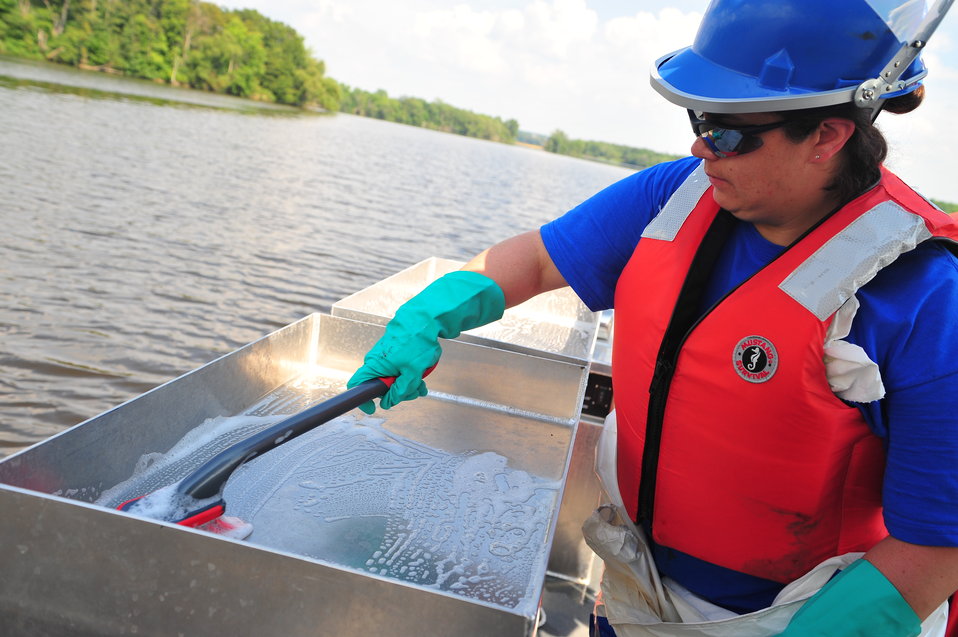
EPA's response to the Enbridge oil spill

August 2, 2010 - Water and sediment sampling operations during Enbridge Spill Response on Morrow Lake near Battle Creek, Michigan from Mudpuppy II, EPA's news research vessel.